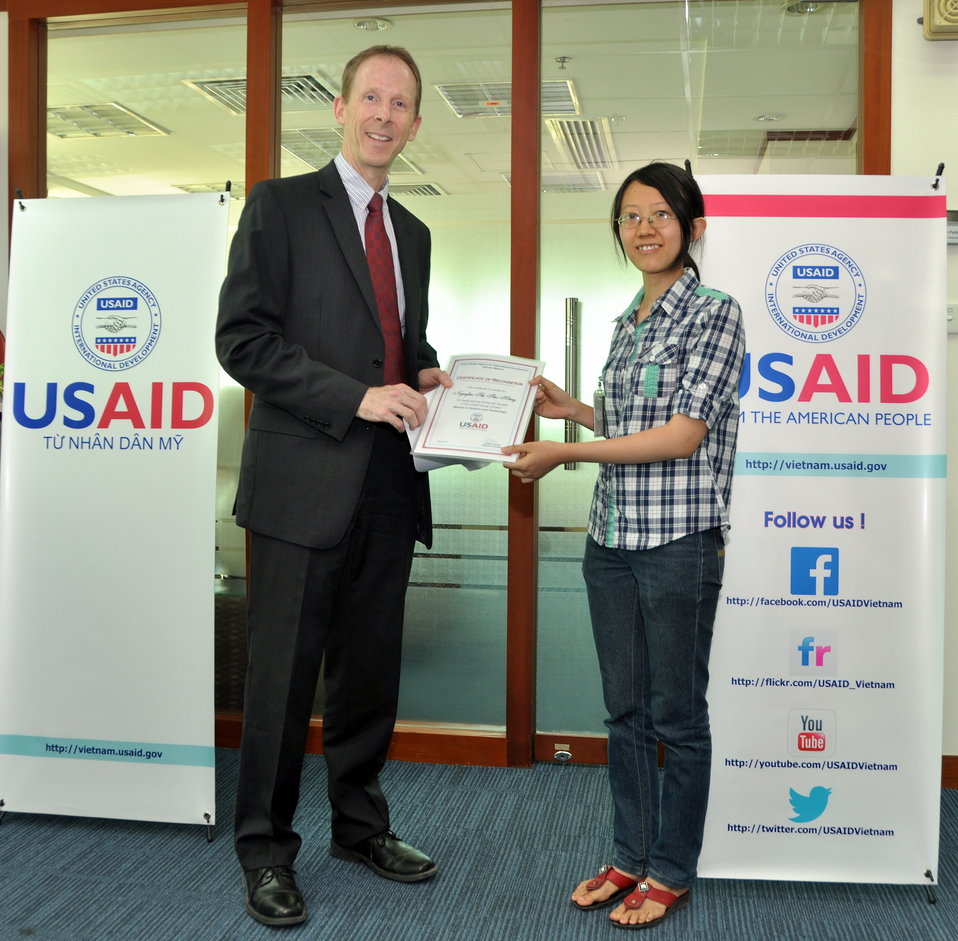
Women in Science and Technology Essay Contest Award Ceremony

USAID Mission Director Joakim Parker awards a certificate of recognition to Ms. Nguyen Thi Thu Hang, a student from Hanoi University of Commerce, who is among top 10 finalists in the USAID Women in Science and Technology Essay contest, on May 16, 2013.